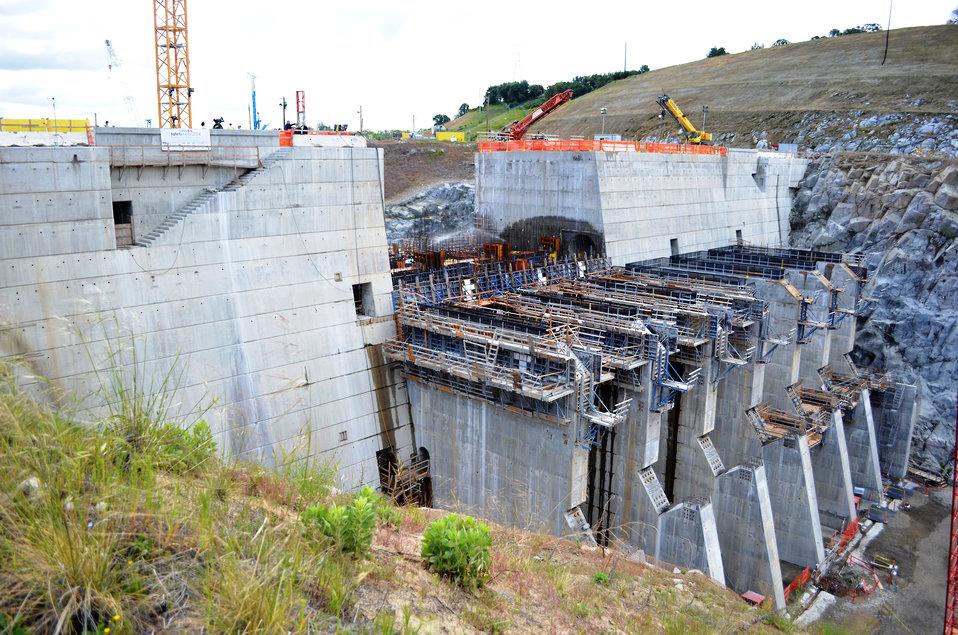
Corps hosts elected officials, partners to celebrate progress on Folsom spillway

More than 100,000 cubic yards of concrete have been placed at the new auxiliary dam in Folsom since May 2012 and concrete work is nearly complete. Elected officials joined the U.S. Army Corps of Engineers and project partners for a media event and site tour of the Folsom Dam auxiliary spillway project in Folsom, Calif., April 26, 2014, to celebrate the transition from concrete placement to spillway gate installation later this summer. The auxiliary spillway project is part of a $900-million cooperative effort to improve the safety of Folsom Dam and reduce flood risk for the Sacramento area.